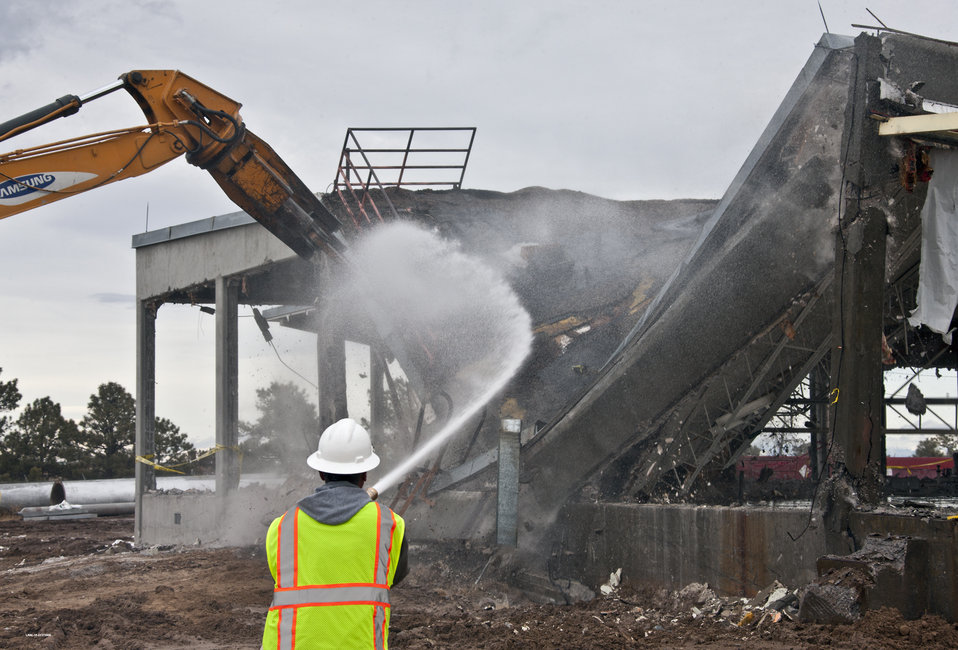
Recovery Act Workers Demolish Last of 24 Buildings and Structures at Los Alamos TA-21

Workers on Dec. 21, 2010 demolished the last and largest of 24 buildings and structures at Los Alamos National Laboratory’s Technical Area 21 slated for removal with Recovery Act funding.

Due to their age and the purposes they served, many of the buildings and structures at TA-21 were contaminated with asbestos and other chemicals and radioactive materials such as tritium, plutonium and americium. Demolition was not as easy as merely swinging a hammer or a wrecking ball and required thorough preparation and careful decontamination.